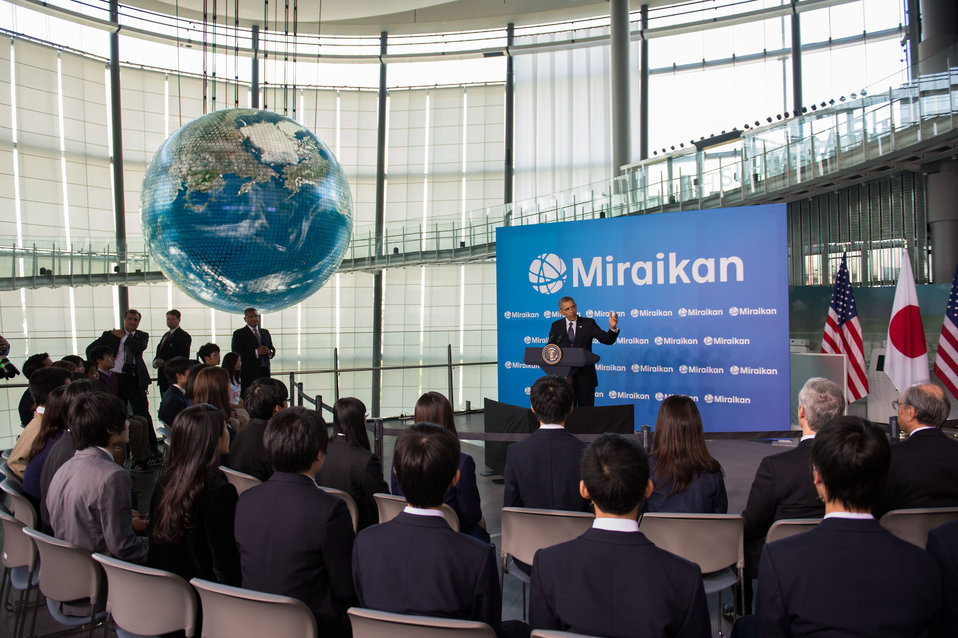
President Obama Delivers Remarks at Miraikan

U.S. President Barack Obama delivers remarks during his visit to the Miraikan (the National Museum of Emerging Science and Innovation) in Tokyo, Japan, on April 24, 2014.